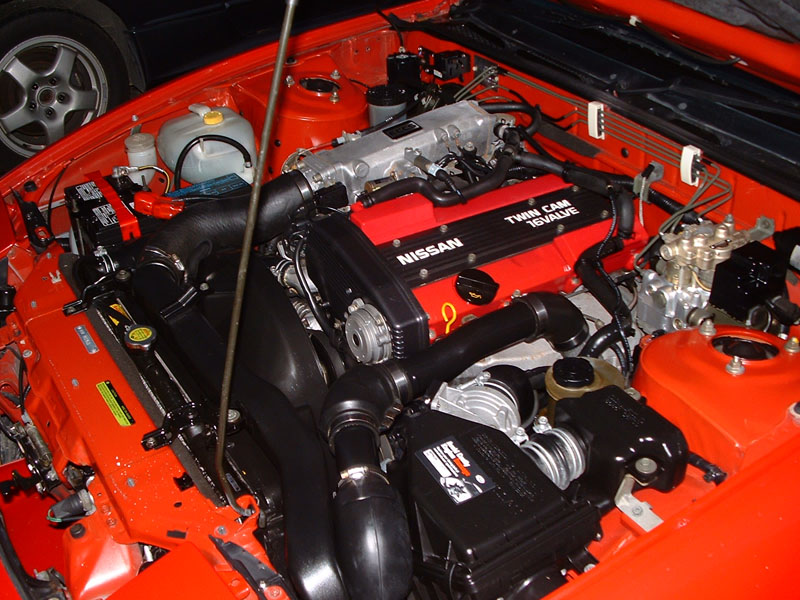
CA18DET